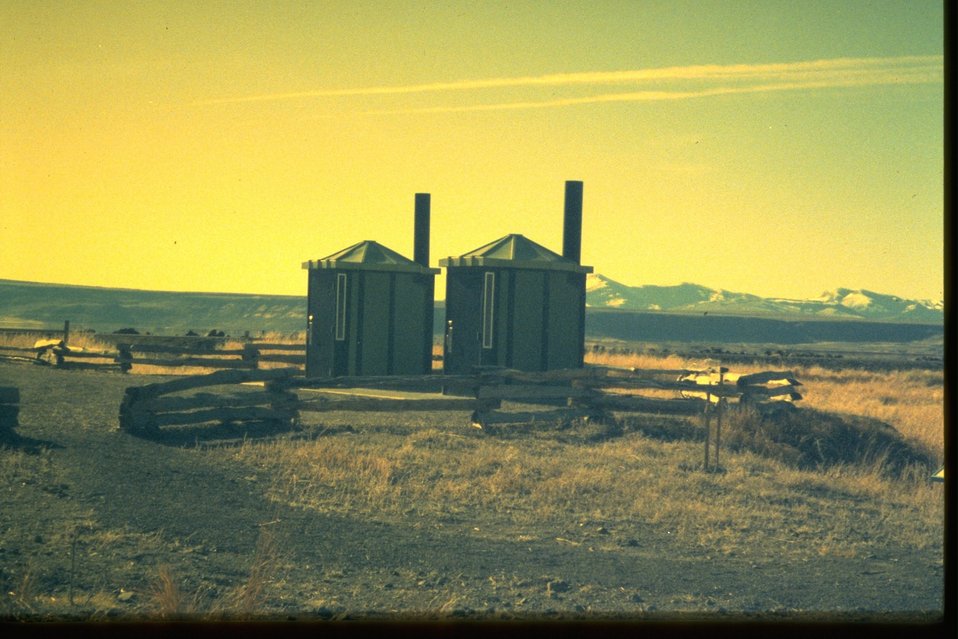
Bathrooms at Warner Wetlands.